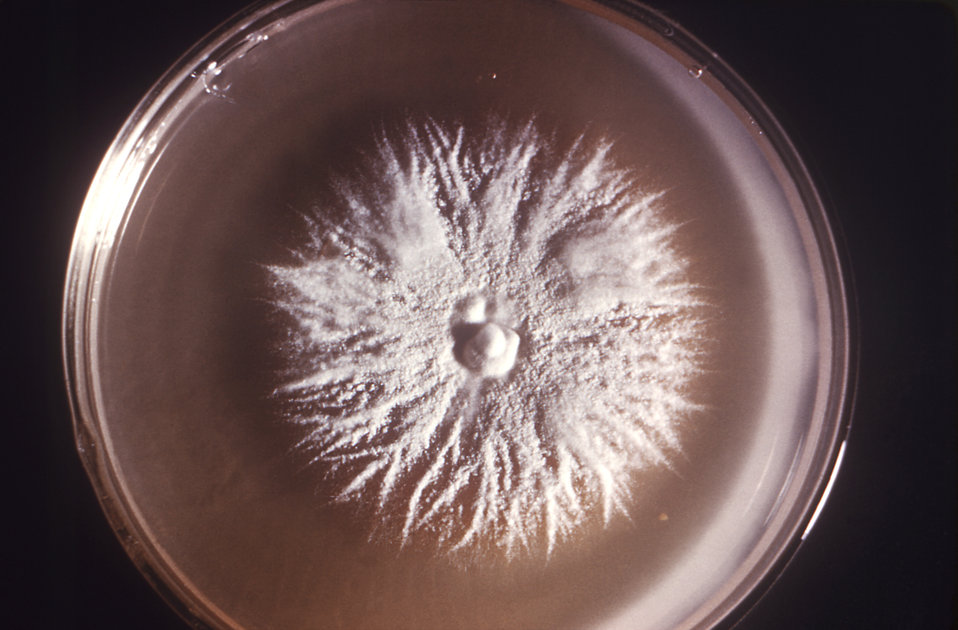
This is a front view of a Petri dish culture plate that had cultivated a large Trichophyton mentagrophytes var. granulare fungal colony. The asteroid-type colony displayed a morphology consisting of a white coloration, and a fuzzy, cottony surface.